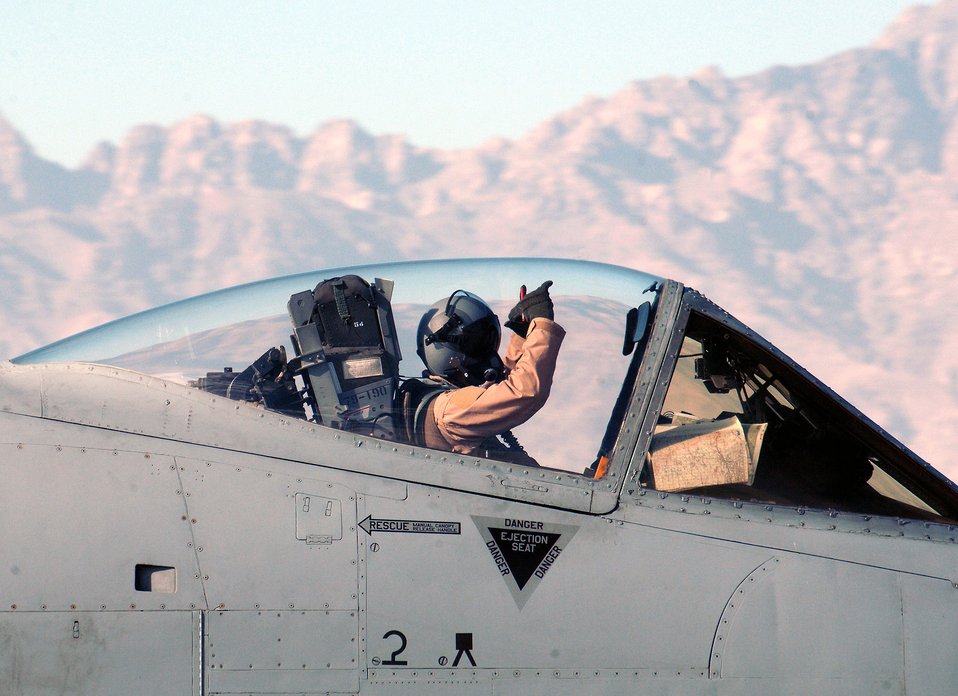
Sept. 9 airpower summary: A-10s provide top cover

An A-10 Thunderbolt II pilot assigned to the 354th Expeditionary Fighter Squadron signals that he is